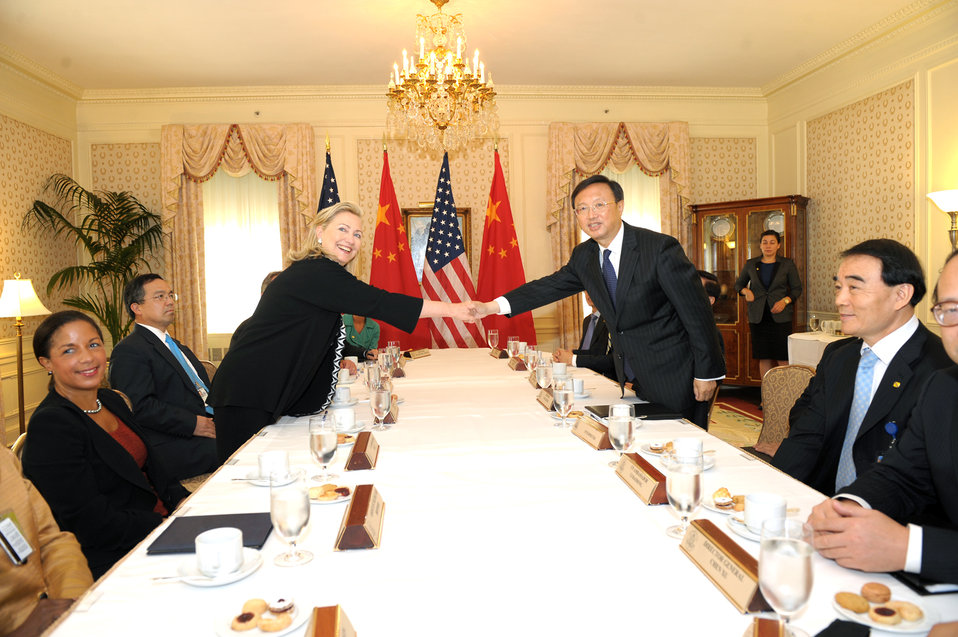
Secretary Clinton Meets With Chinese Foreign Minister Yang Jiechi

U.S. Secretary of State Hillary Rodham Clinton meets with Chinese Foreign Minister Yang Jiechi in New York, New York, on September 26, 2011.